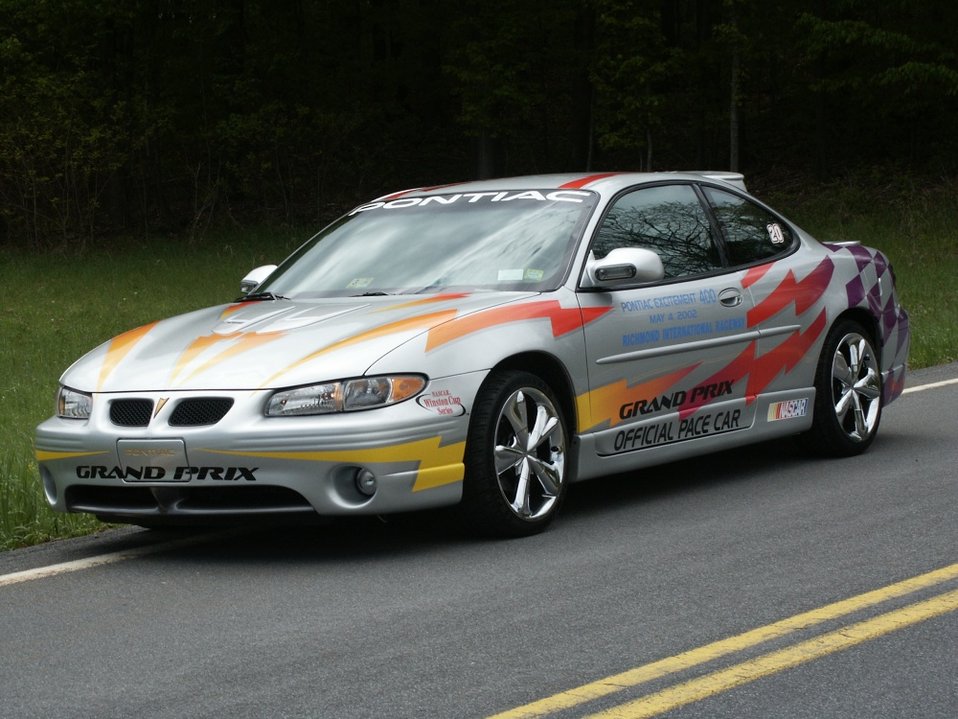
2001 NASCAR Pace Car
Licensing